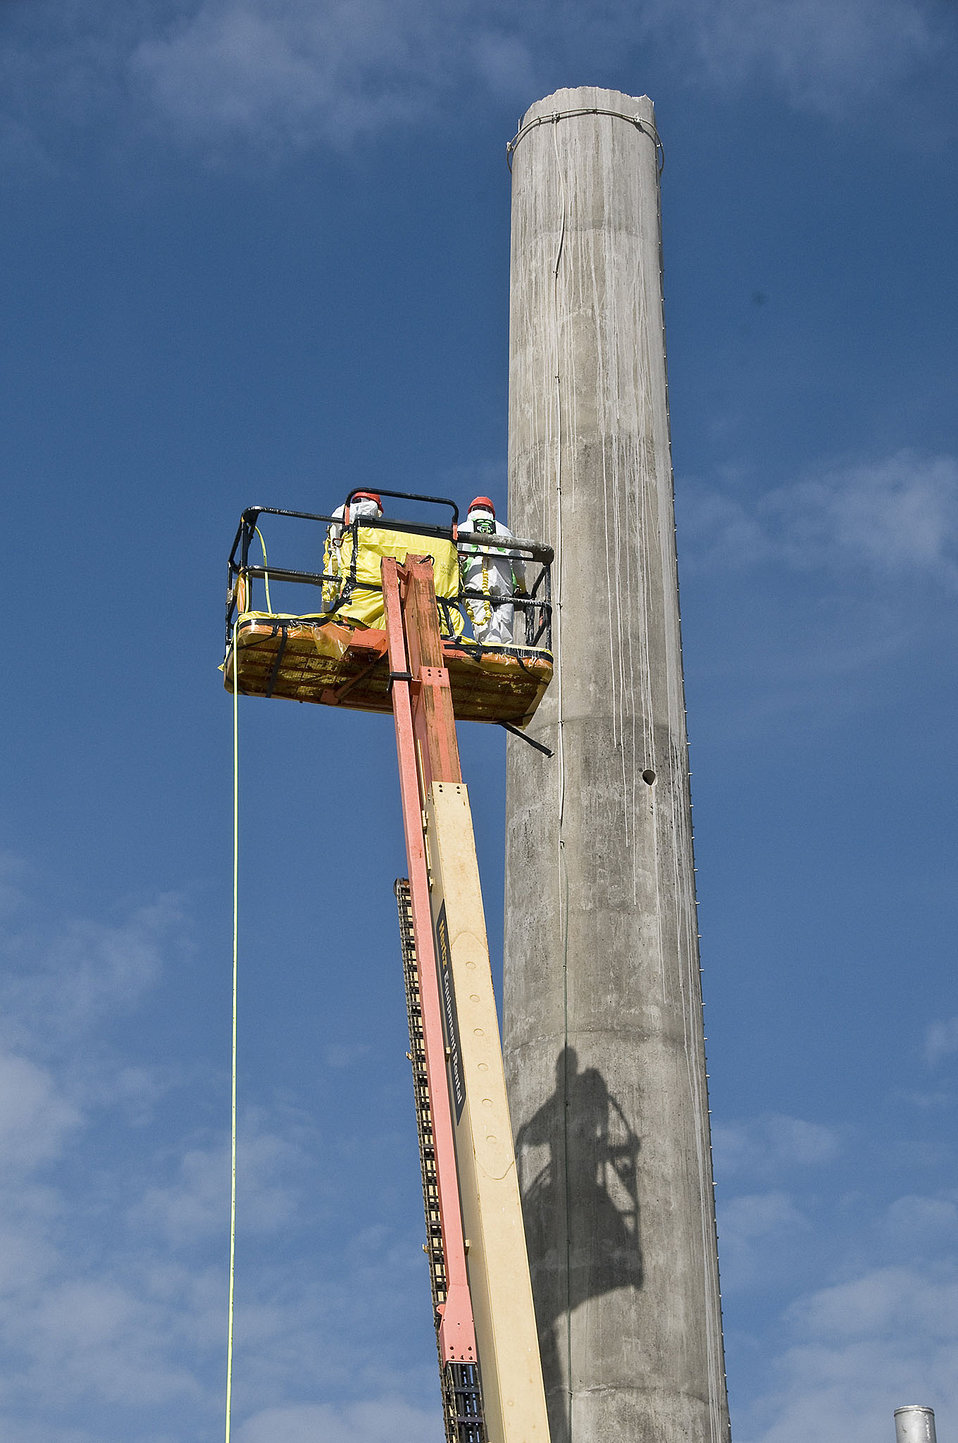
Safety and Training Key to Stack Reduction Demolition

A man lift carriers workers to the top of the stack, which will be reduced in size from 75 feet to 28 feet.